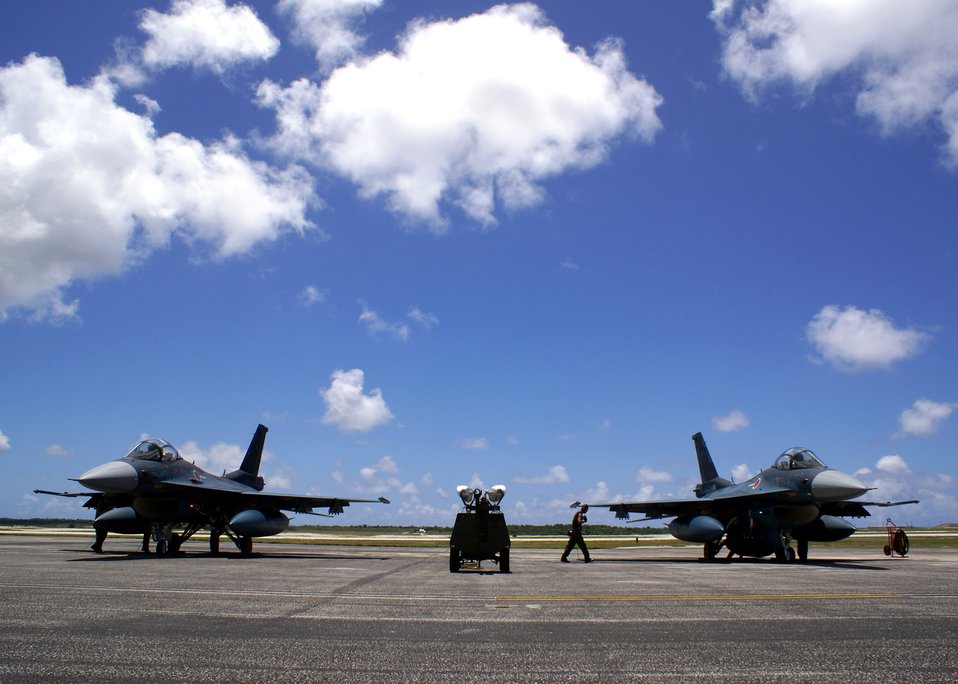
F-2 makes live bomb debut during exercise

Two Mitsubishi F-2s sit on the flightline June 13 at Andersen Air Force Base, Guam, awaiting takeoff. The F-2s are part of a historic Japan Air Self Defense Force deployment from Misawa Air Base, Japan. This Cope North exercise is the first time the F-2s will deploy outside of Japan, and the first time they will drop live munitions on a fixed target.